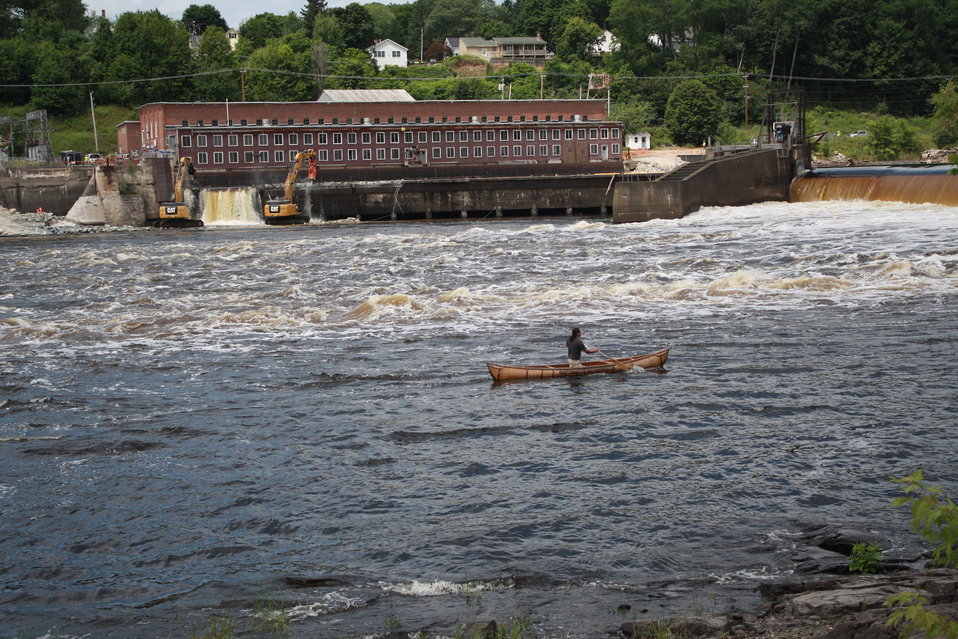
Veazie Dam Removal

Joseph Dana of the Penobscot Indian Nation paddles a traditional birch-bark canoe past the breaching.